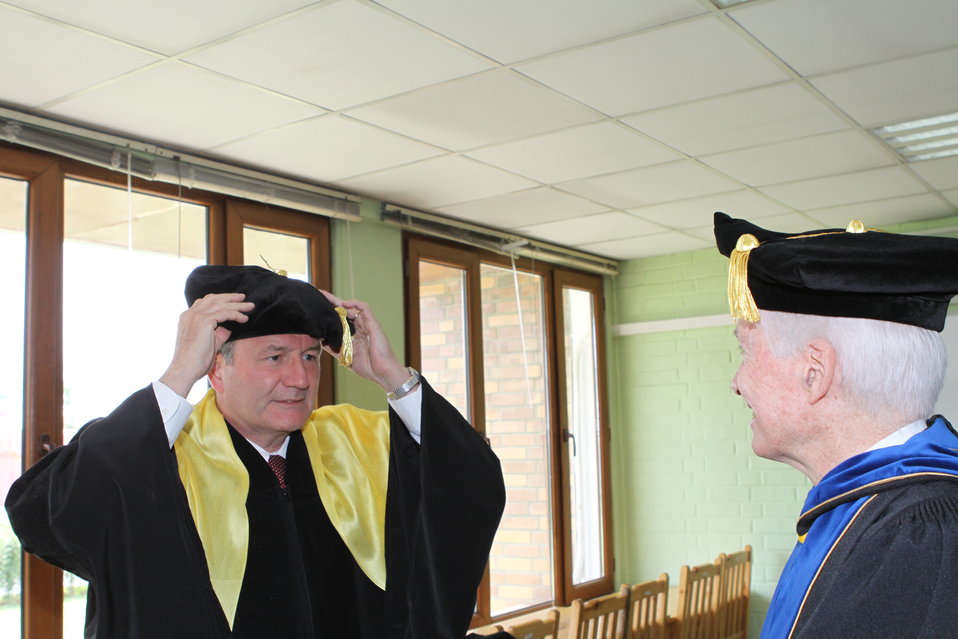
100526 AUAF Graduation 054